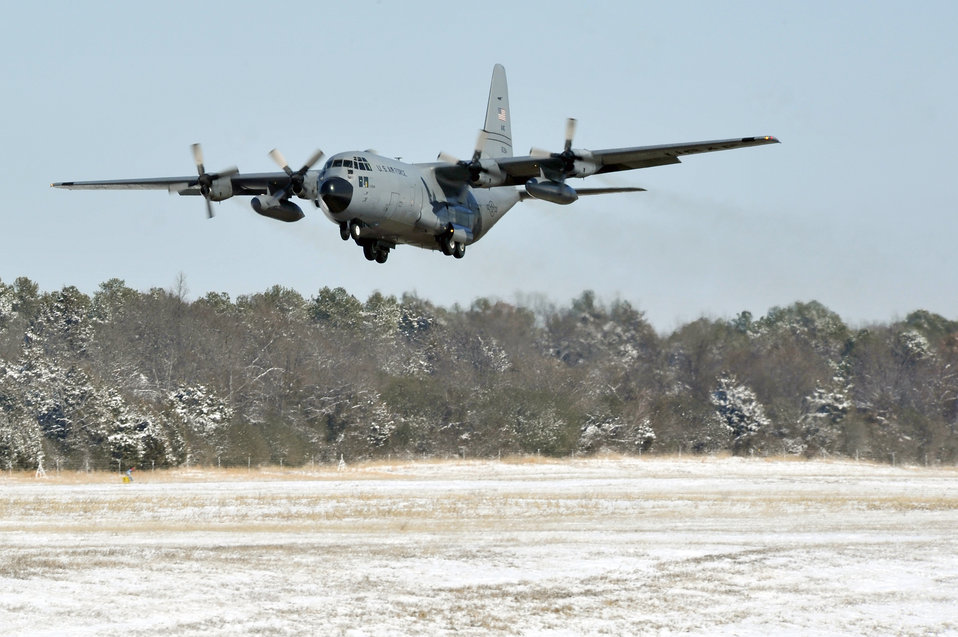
On our way

A C-130 Hercules takes off Feb. 10, 2011, from Little Rock Air Force Base, Ark.